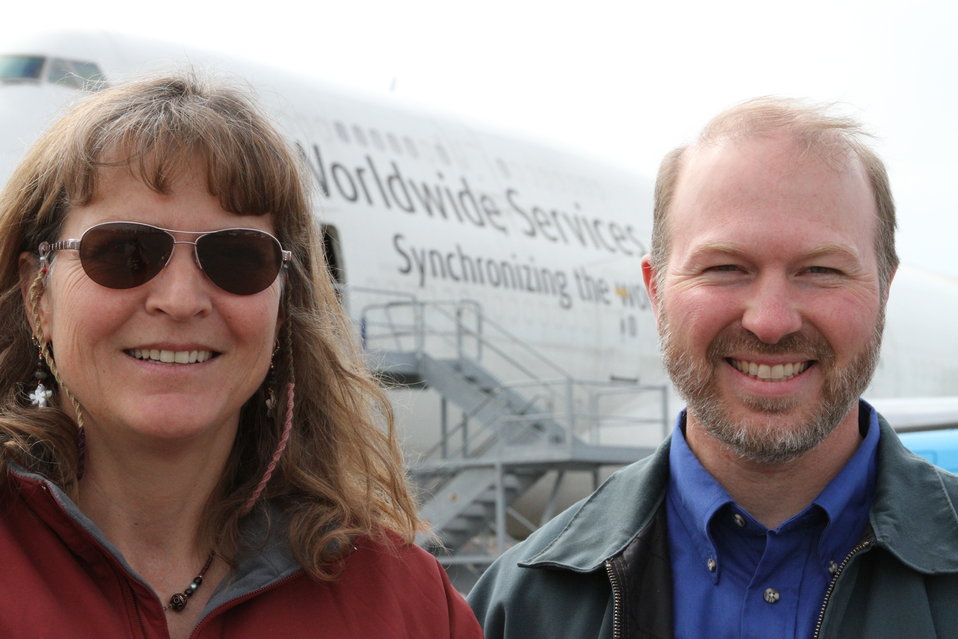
miller volle